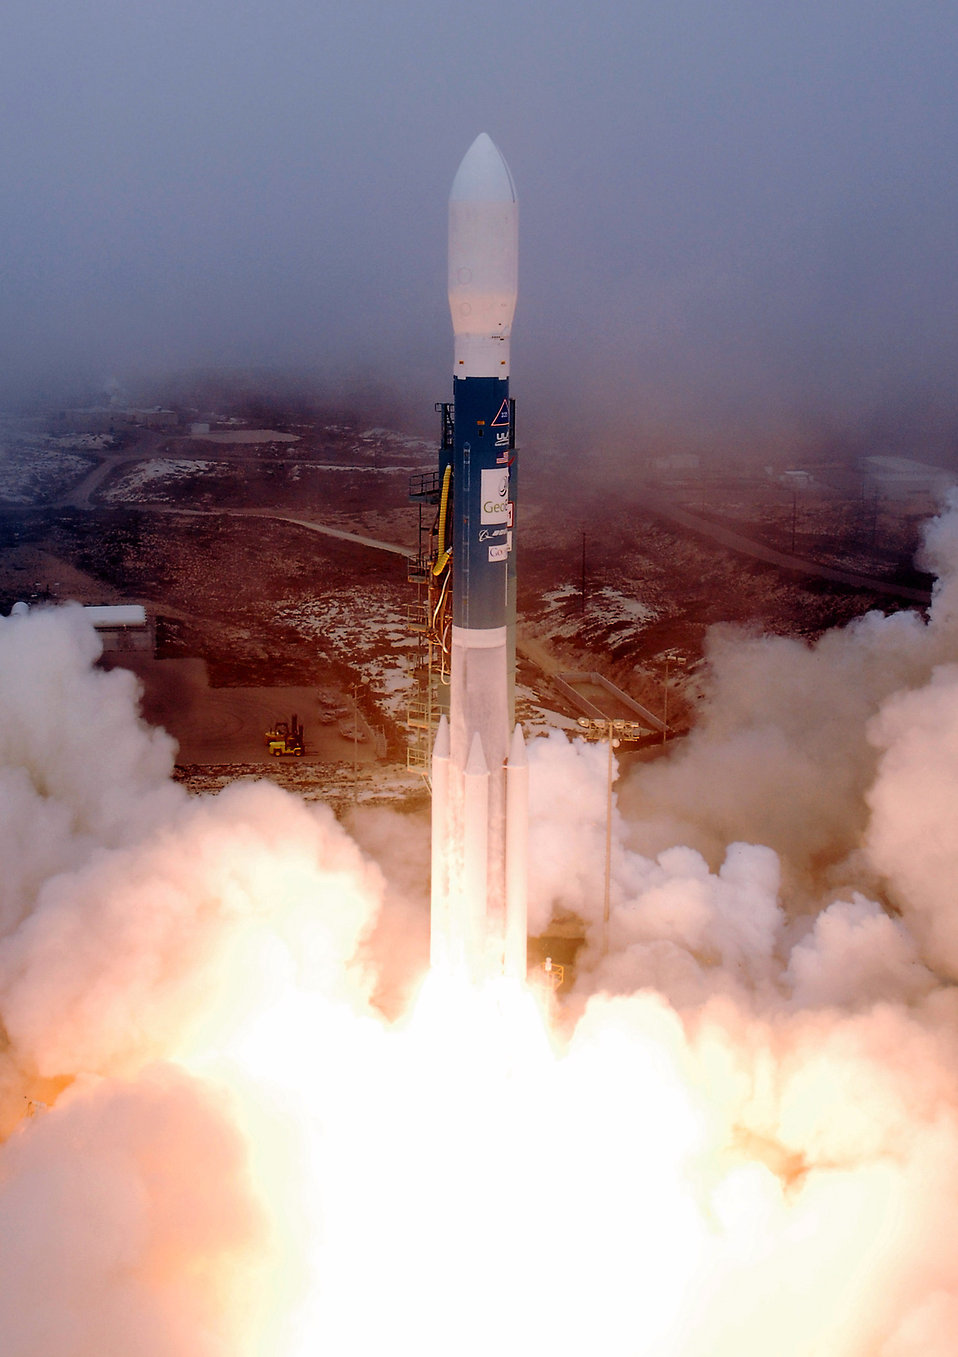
Blast off

A Delta II rocket successfully launched at 11:51 a.m. on Sept. 6 from Vandenberg Air Force Base, Calif. The rocket carried the GeoEye-1 Satellite into a circular Sun-synchronous orbit where the satellite will begin its mission of collecting color images of the Earth.